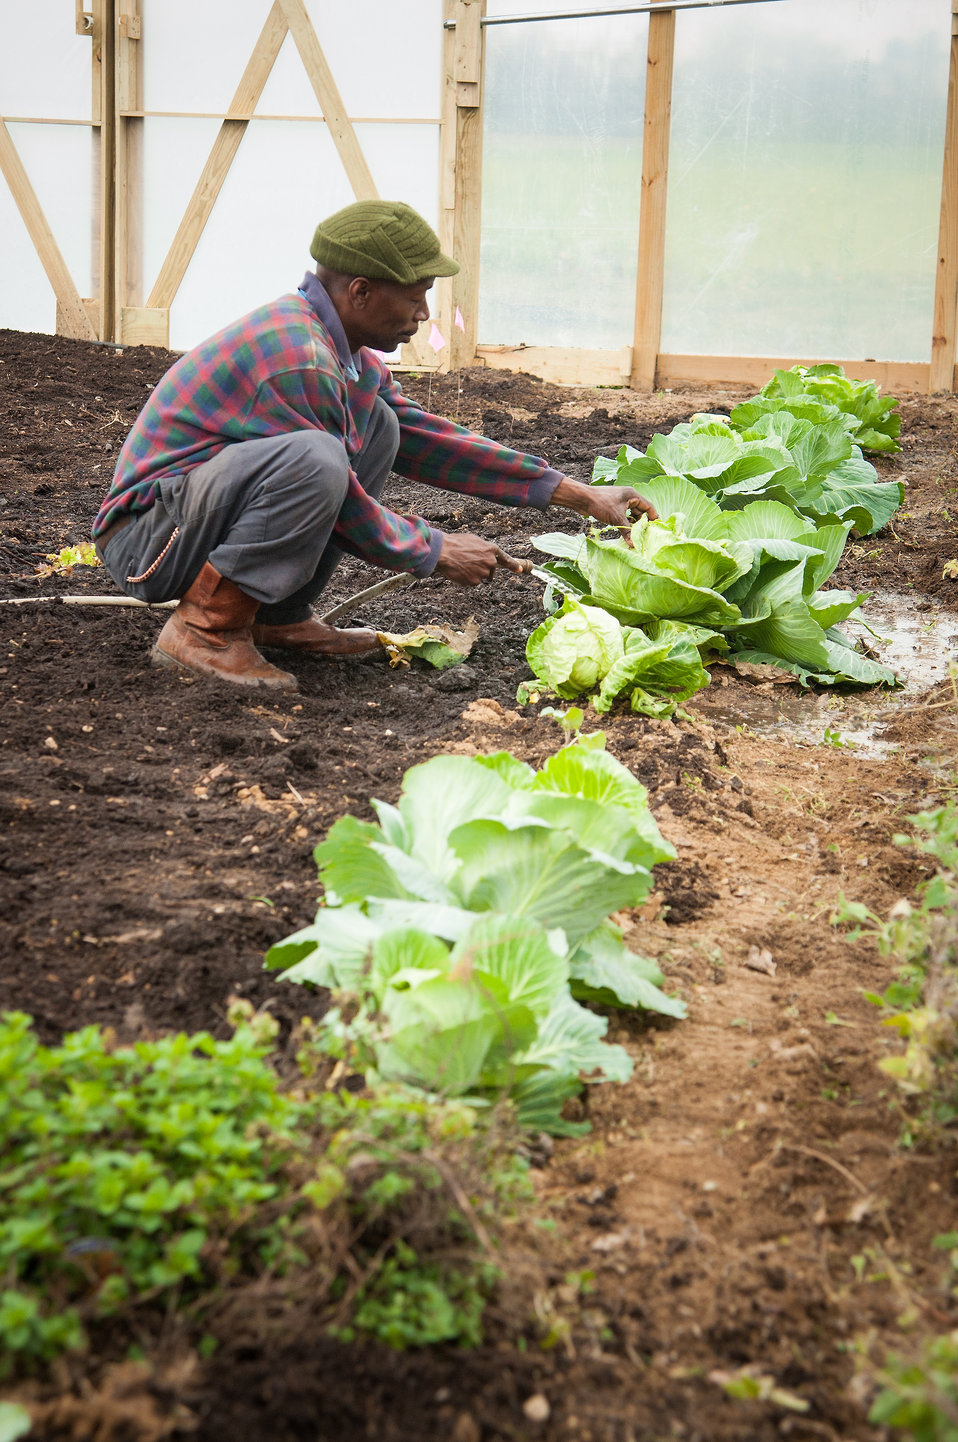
Aeric Cole waters cabbage growing in a high tunnel house at the East Arkansas Enterprise Community, (EAEC) Inc. in Forest City, AR on Mar. 4, 2013. The EAEC is one of 42 community-based organizations located in high poverty areas in the U.S. to benefit from the Arkansas Delta Seeds of Change (ADSOC) Initiative. The U.S. Department of Agriculture (USDA) in partnership with Heifer International (an International organization whose mission is to work with communities to end hunger and poverty and care for the Earth) and various for-profit and non-profit organizations have organized the Seeds of Change Implementation Plan to use sustainable agriculture to build food systems in the Arkansas Delta.